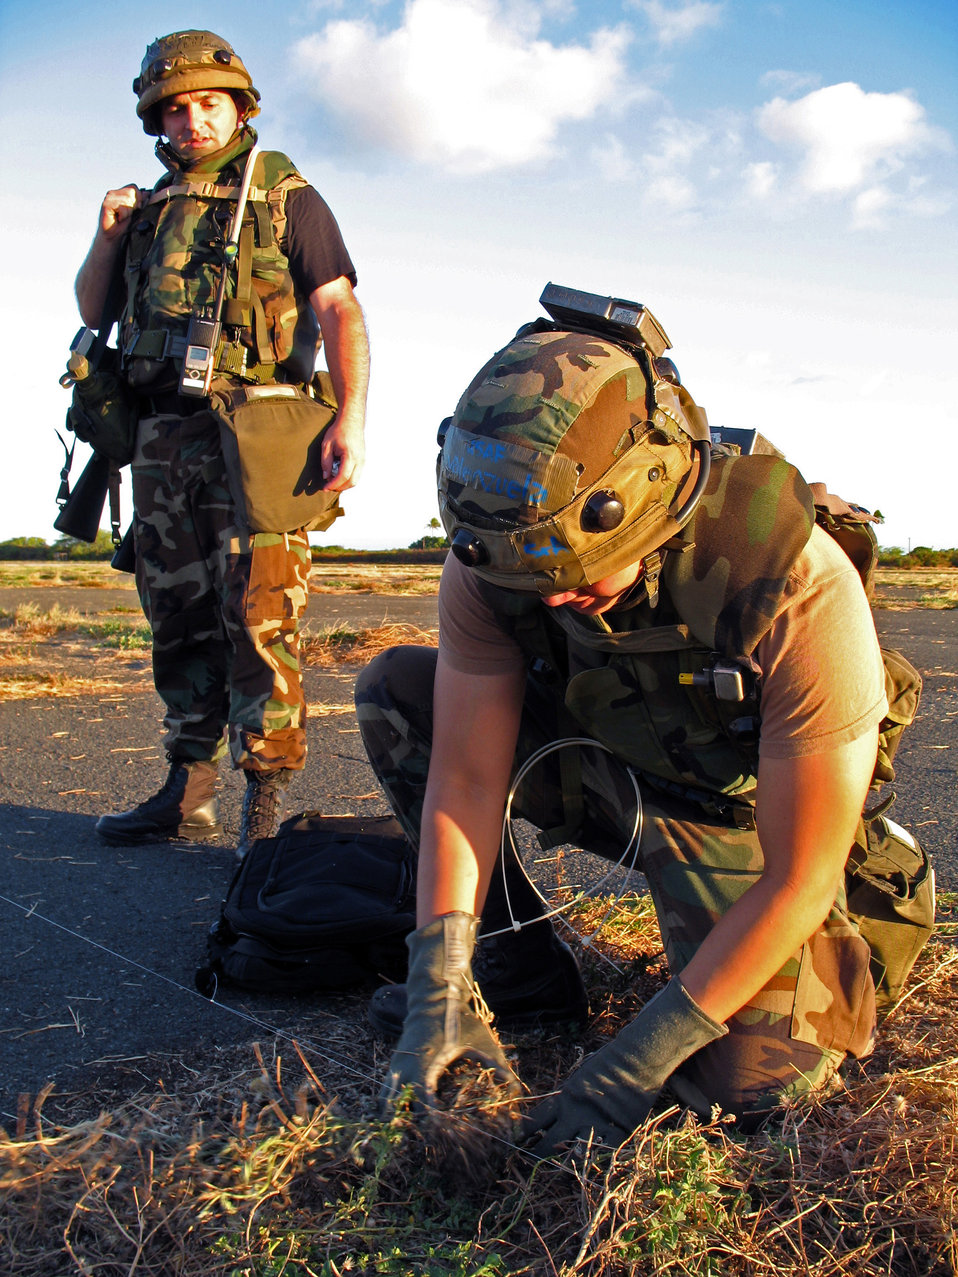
Hawaii air traffic controllers train to fight

Chief Master Sgt. William Stumbo Jr. watches as Senior Airman Julius Valenzuela sets glow stick traps to warn of enemy intrusions during an exercise at Naval Station Barber's Point, Hawaii, on July 25. They are with the Hawaii Air National Guard's 297th Air Traffic Control Squadron.